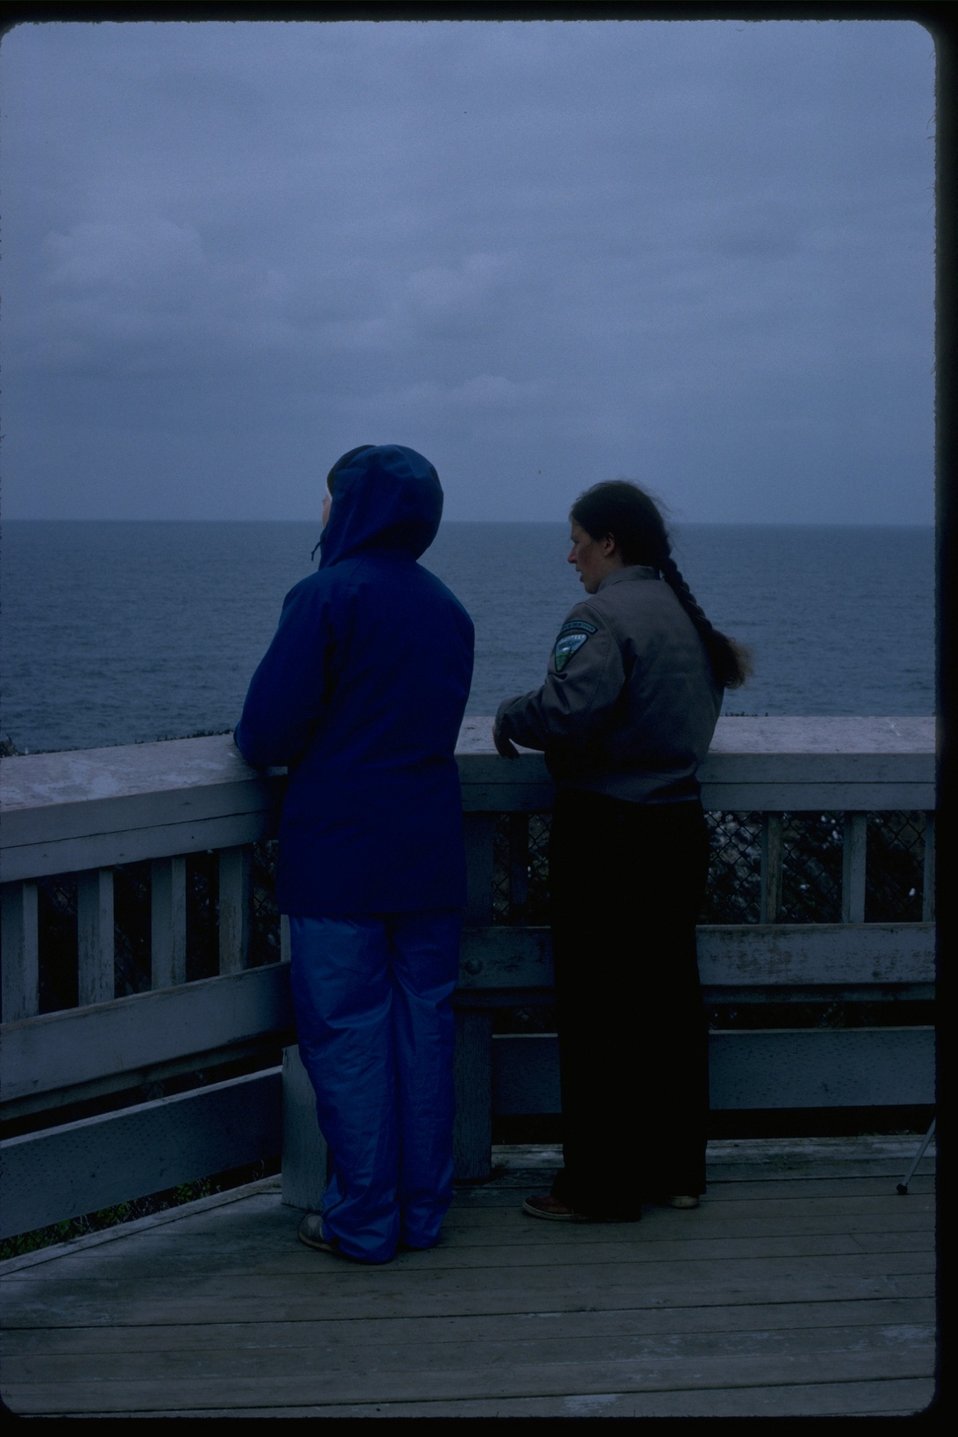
Visitor with a BLM Student Conservation Association volunteer.